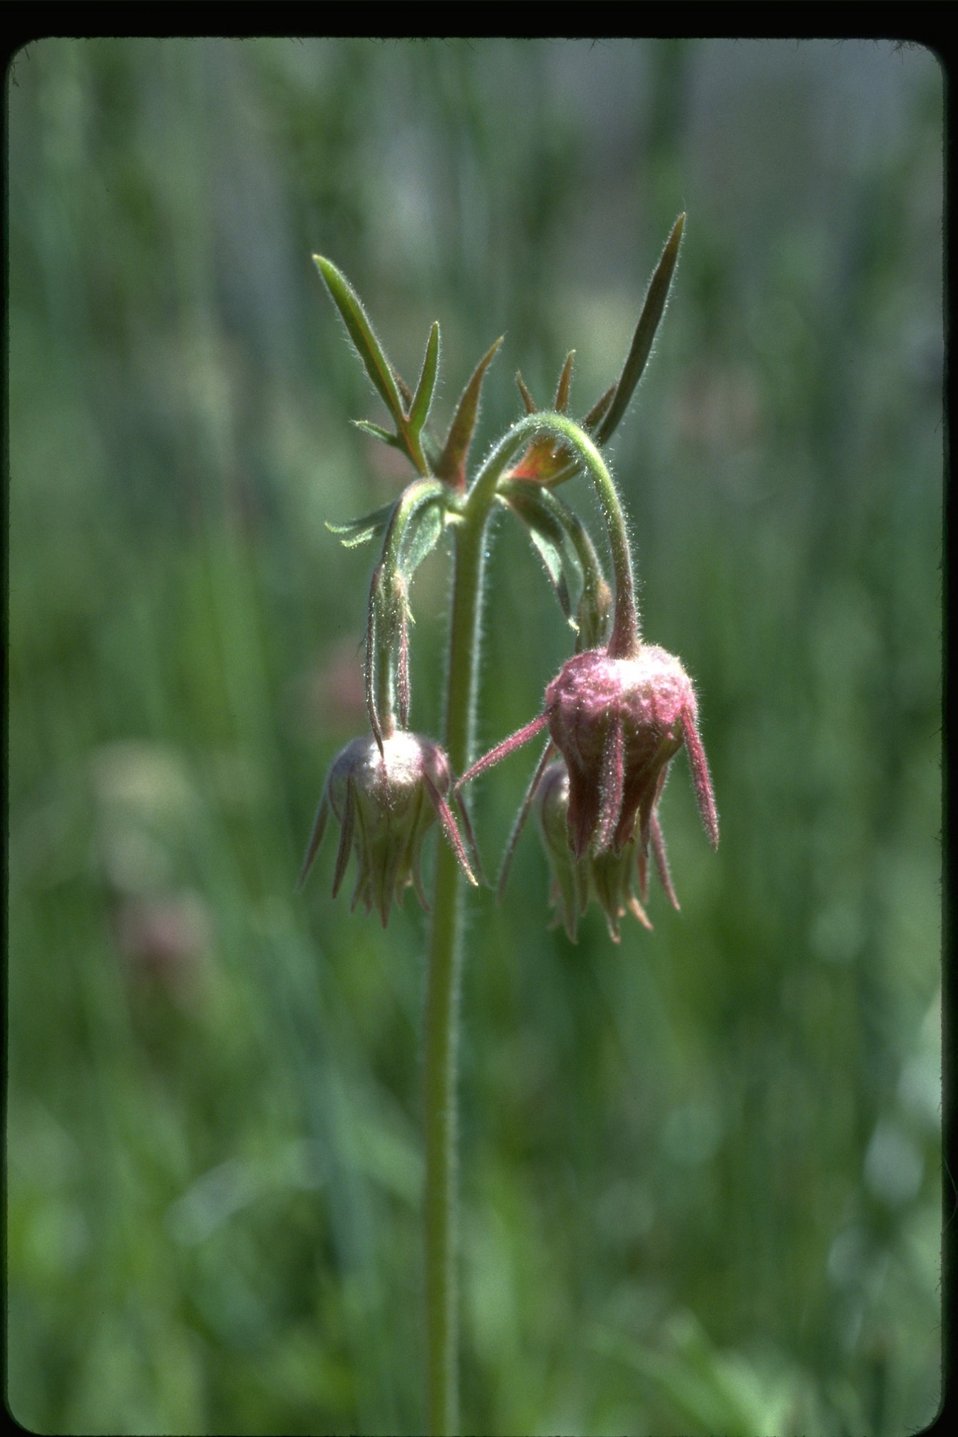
Prairie Smoke wildflowers in early stage.